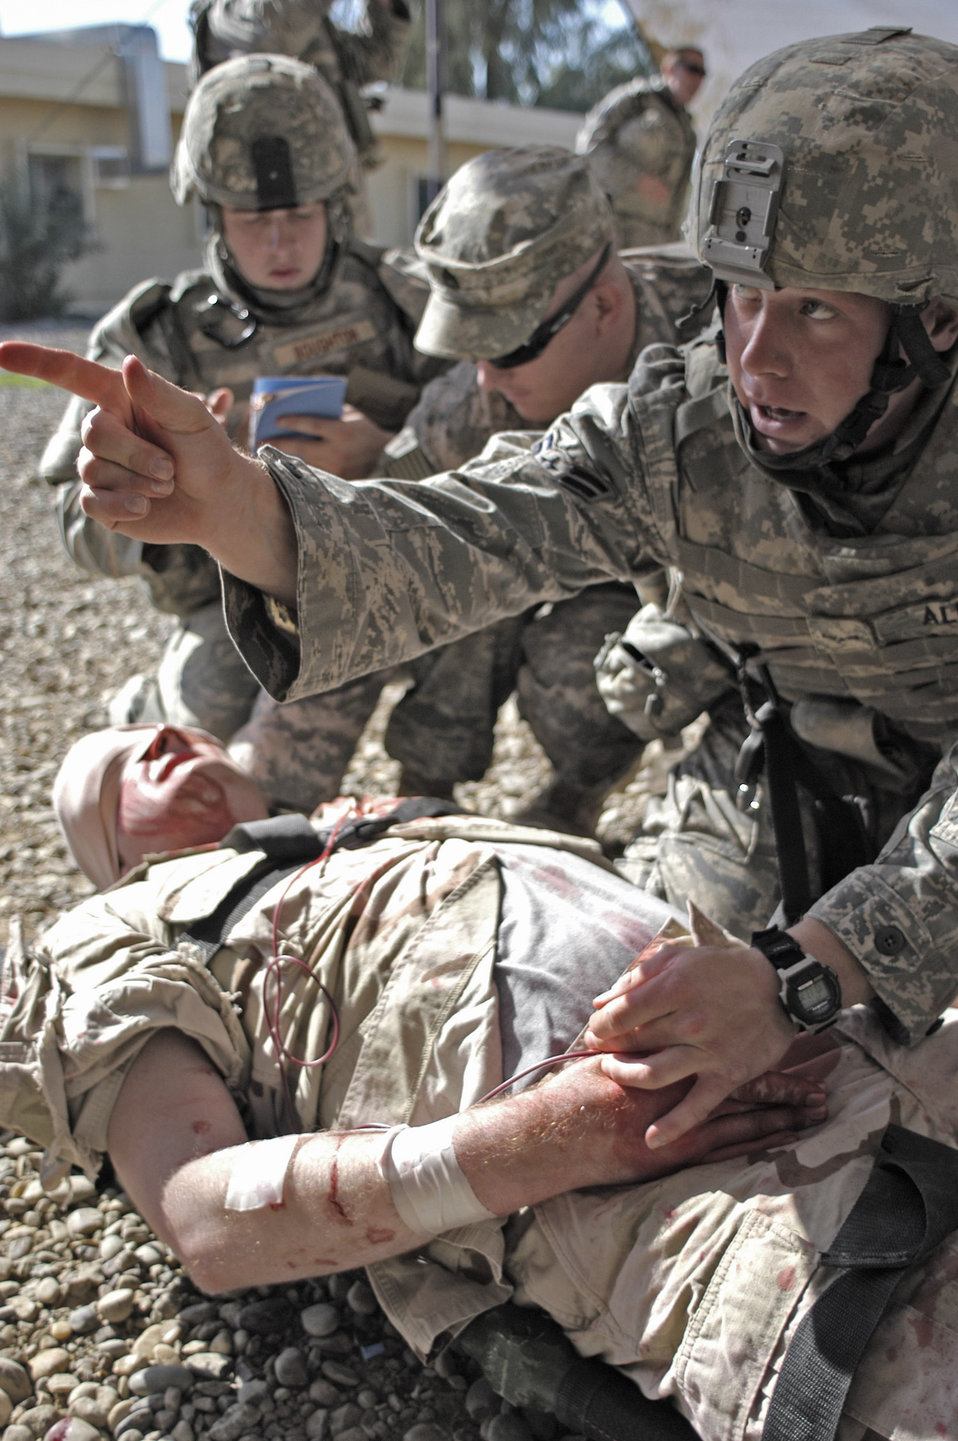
Airmen train to start warrior care on the battlefield

Airman 1st Class Ryan Allen coordinates treatment for a roleplayer who was simulated wounded for training Nov. 12 at Joint Base Balad, Iraq. Airman Allen, a security forces apprentice deployed from the 99th Security Forces Squadron, at Nellis Air Force Base, Nev., attended combat lifesaver training, which is a requirement for personnel in the 332nd Expeditionary Security Forces Group. He is assigned to the 532nd Expeditionary Security Forces Squadron and is a native of Colorado Springs, Colo.